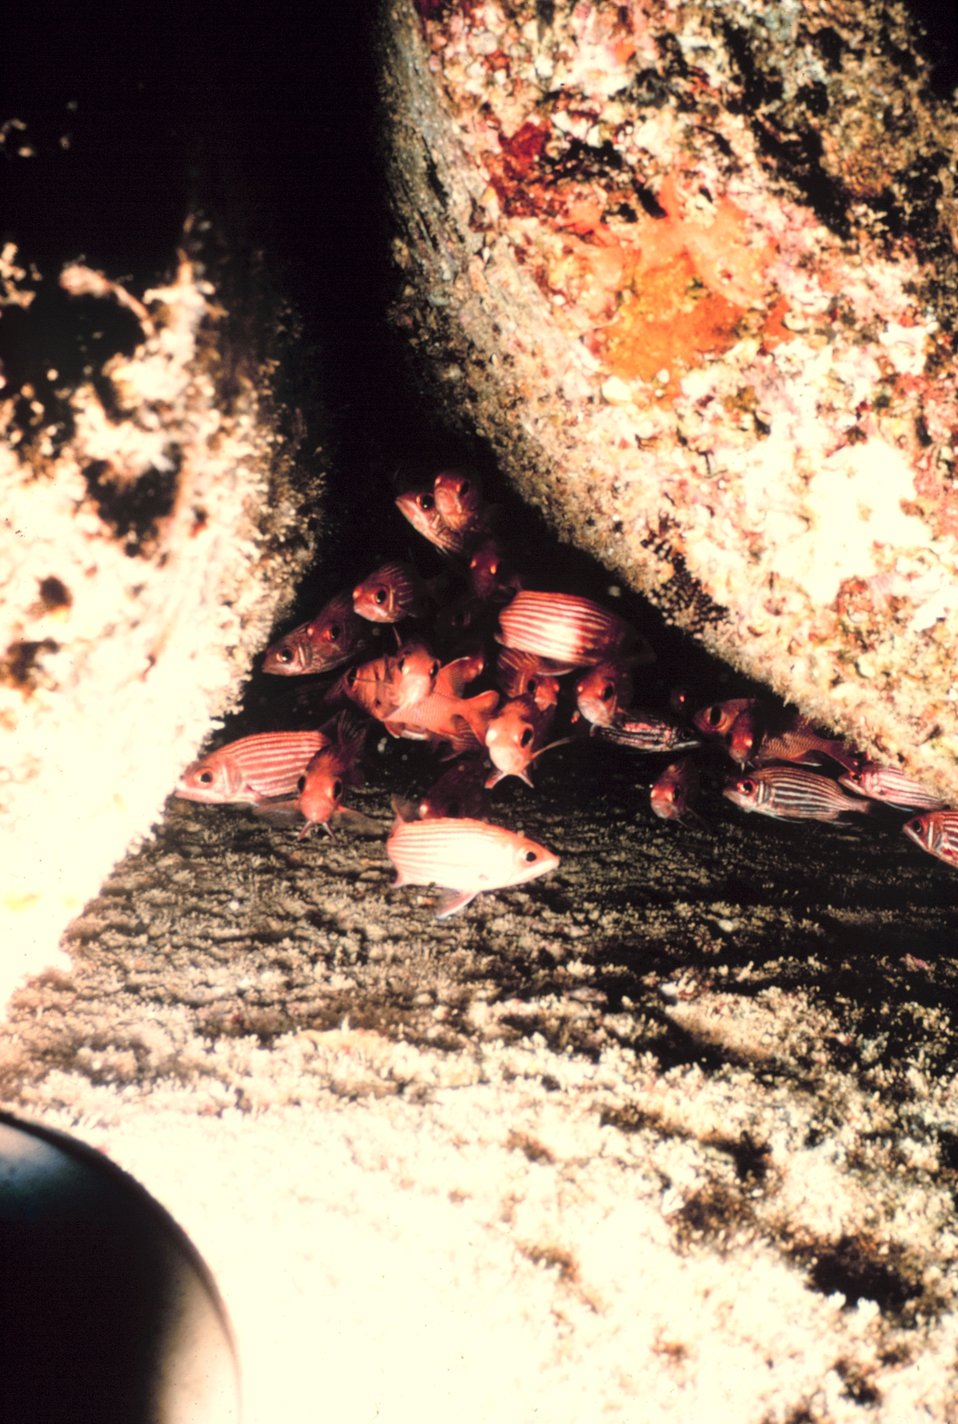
Mixed school of squirrel fish, Myripristis sp. and Holocentrus sp., in crevice between two pipes.